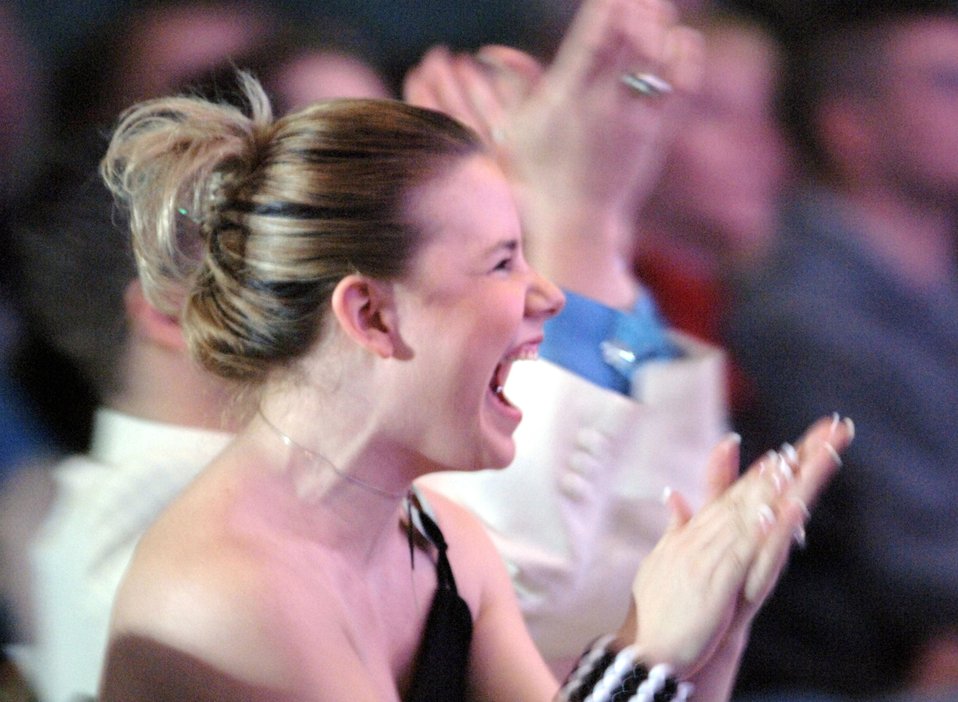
Tops in Blue

YOKOTA AIR BASE, Japan (AFPN) -- Air Force wife Ashley Montgomery was one of several hundred people who applauded the performance by members of the Air Force's Tops in Blue here. The group -- called the Air Force's